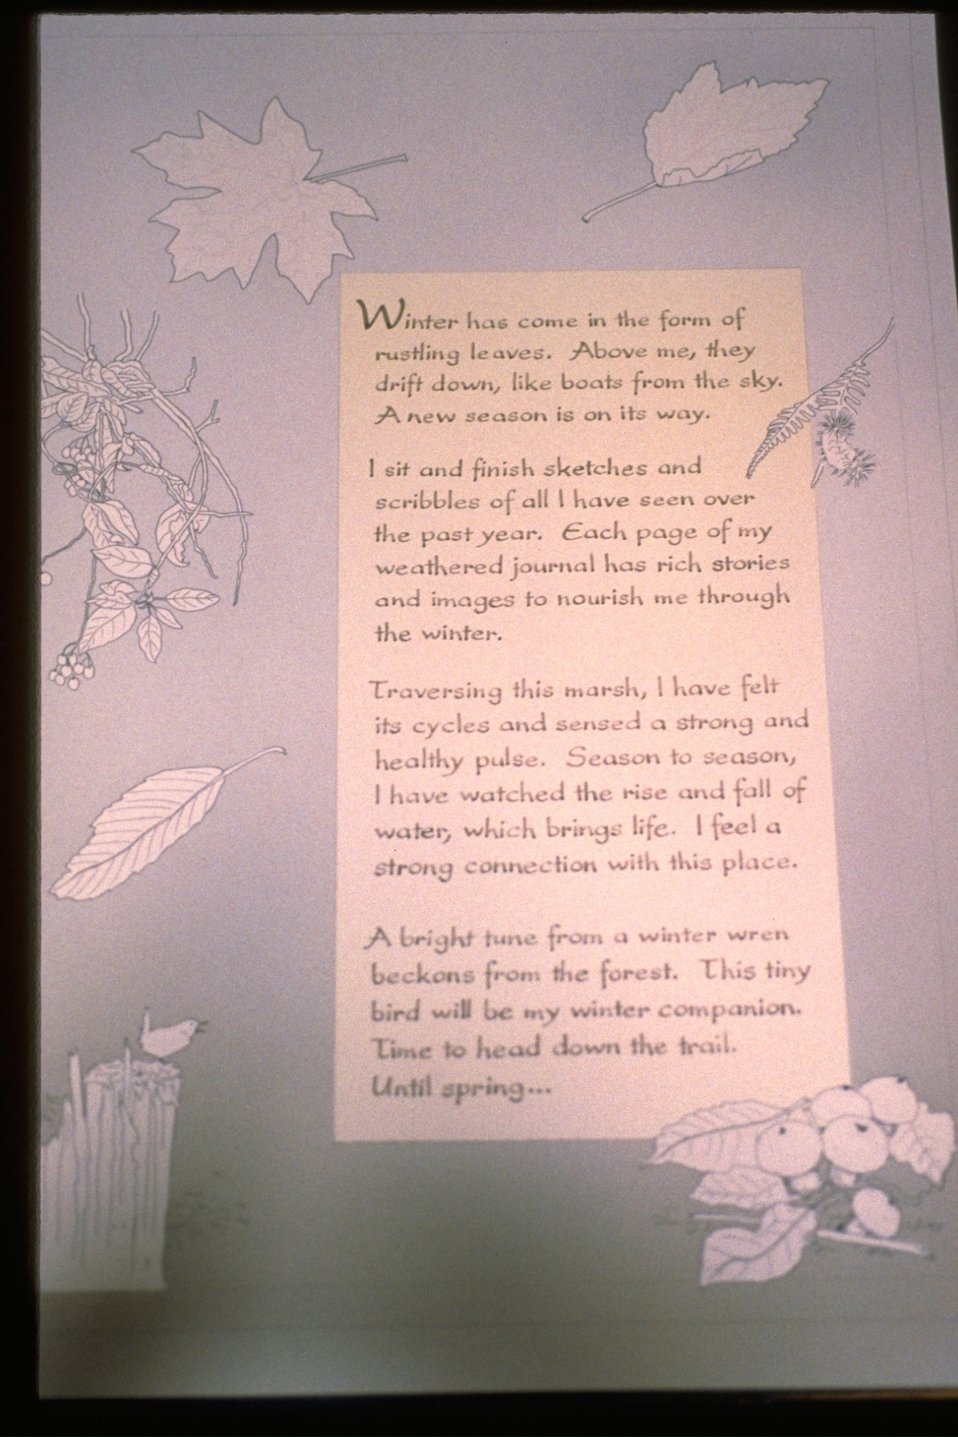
Interpretive Panels: Boardwalk Trail Journals.